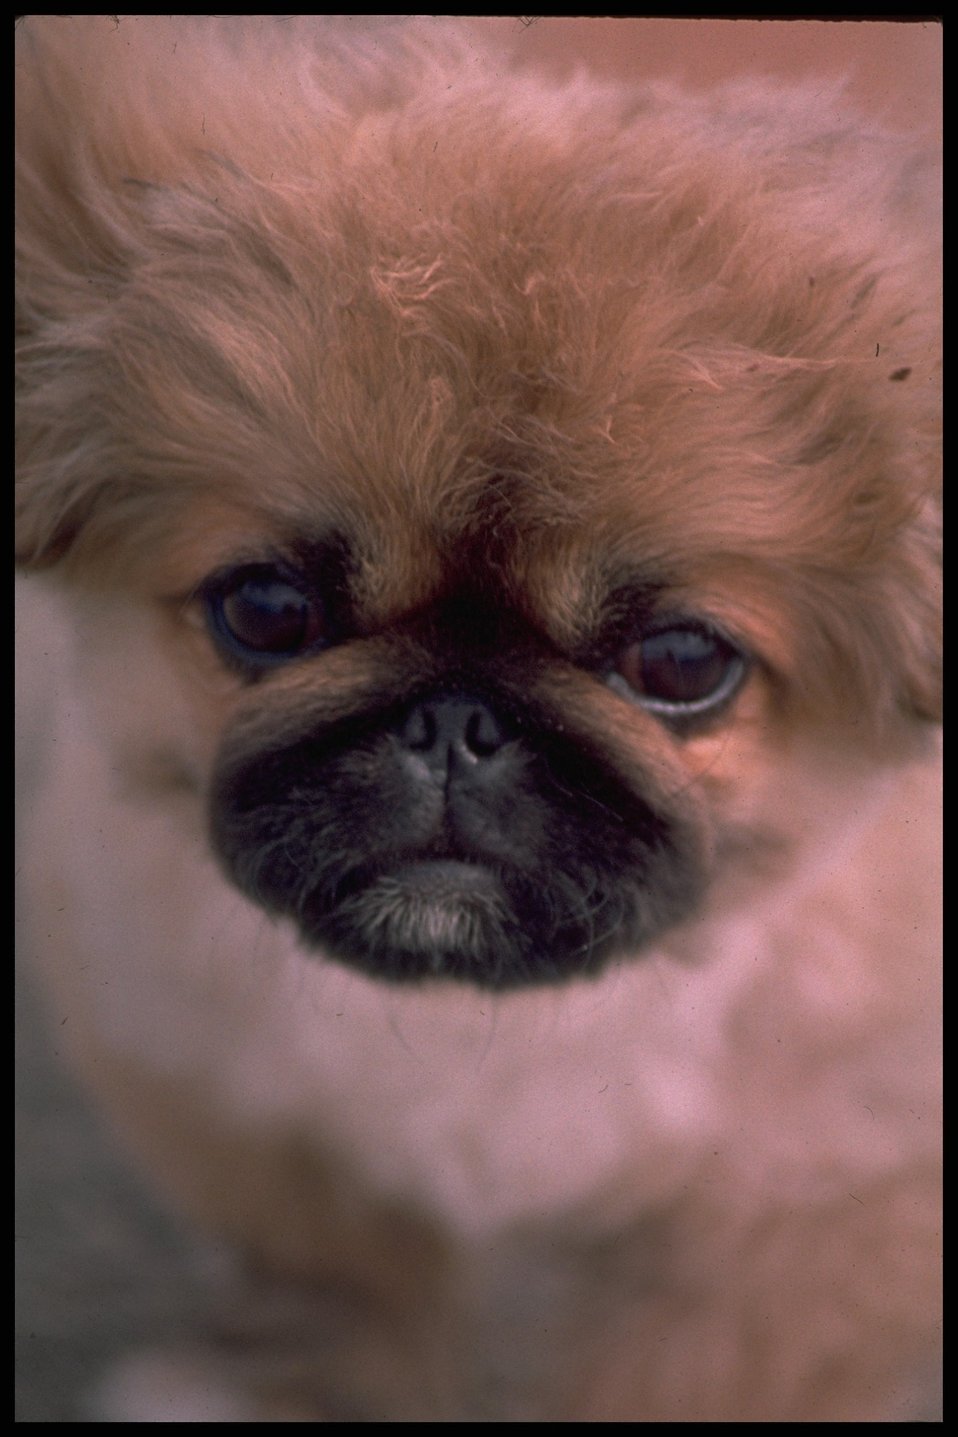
Close shot of tourist dog at Warner Wet Lands, Lakeview District.